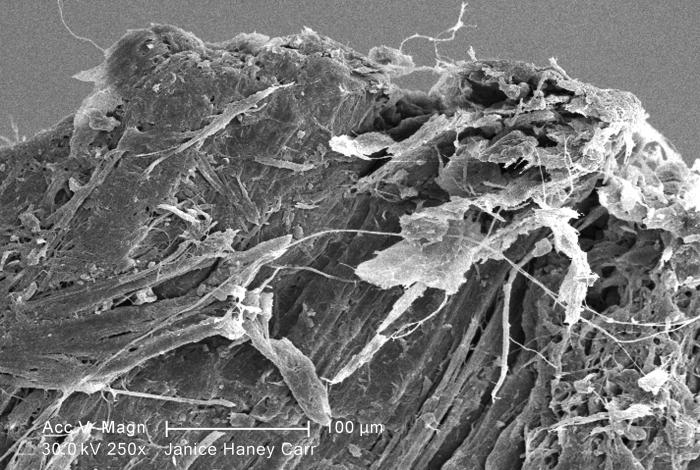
Under a moderate magnification of 250X, this scanning electron micrograph (SEM) revealed some of the microcrystalline ultrastructure exhibited by a piece of raw chrysotile, or white asbestos, which had been excavated from the Lowell Asbestos Mine on Belvidere Mountain, Vermont.